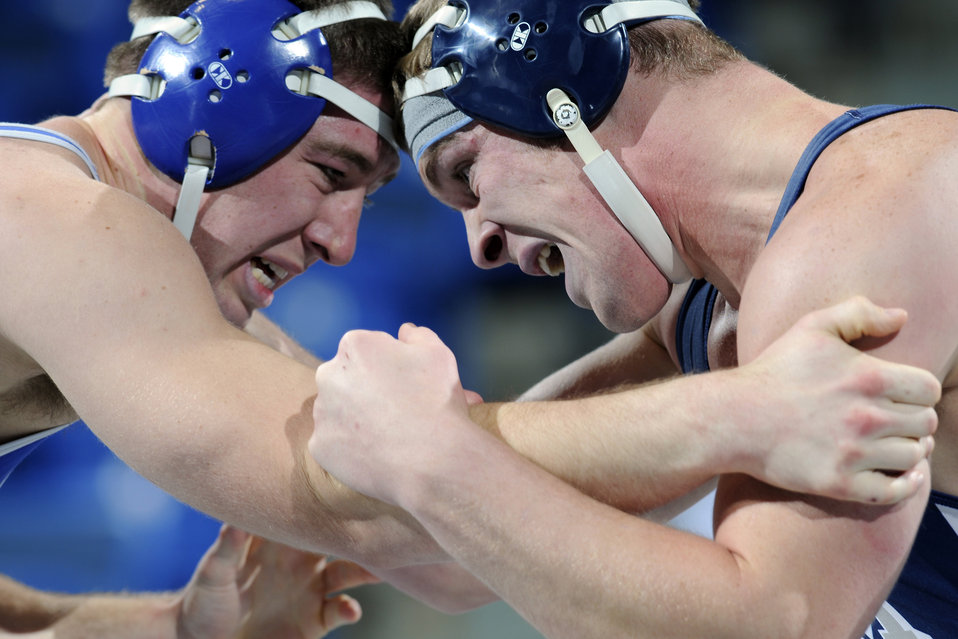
Falcons lose in first home contest

U.S. Air Force Academy junior Neil Delaney wrestles Colorado School of Mines' Brennen Knerr in the 197-lb. weight class during the Falcons' first home contest of the season at the Air Force Academy's Clune Arena Dec. 11, 2009. Delaney won 3-1, and Air Force defeated Colorado, 33-13.